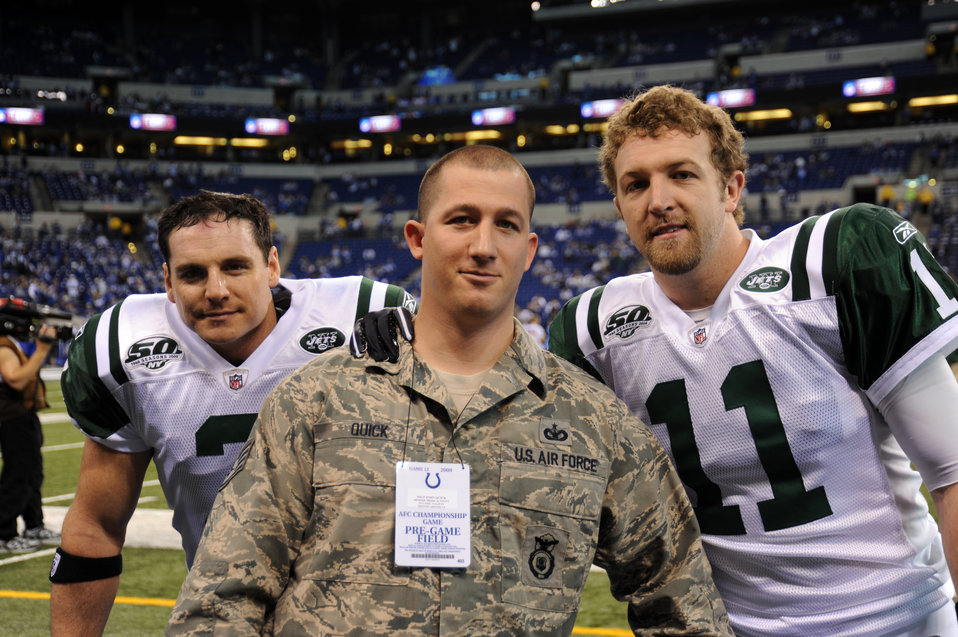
Airmen honor the colors before NFL's AFC Championship Game

Staff Sgt. John Quick poses for a photograph with Jay Feely, a New York Jets kicker and Kellen Clemens, a backup quarterback, before the start of the NFL's American Football Conference Championship Game between the Jets and the Indianapolis Colts Jan. 24, 2010, in Indianapolis, Ind. The Colts won the game 30-17 and will face the New Orleans Saints in the Super Bowl Feb. 7, 2010, in Miami. Sergeant Quick is from the 436th Security Forces Squadron at Dover Air Force Base, Del.